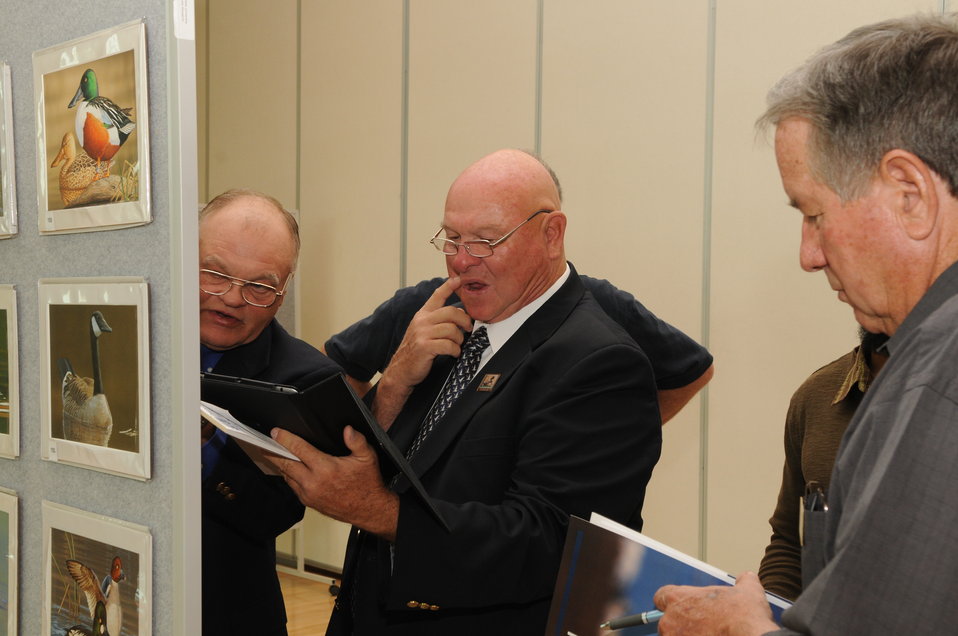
Judging

The U.S. Fish & Wildlife Service sponsored the 2012 Federal Duck Stamp Art Contest September 28 and 29 in Ogden, Utah, at Weber State University. A panel of five judges was responsible for choosing the art work used to design the 2013-2014 Migratory Bird Hunting and Conservation Stamp.